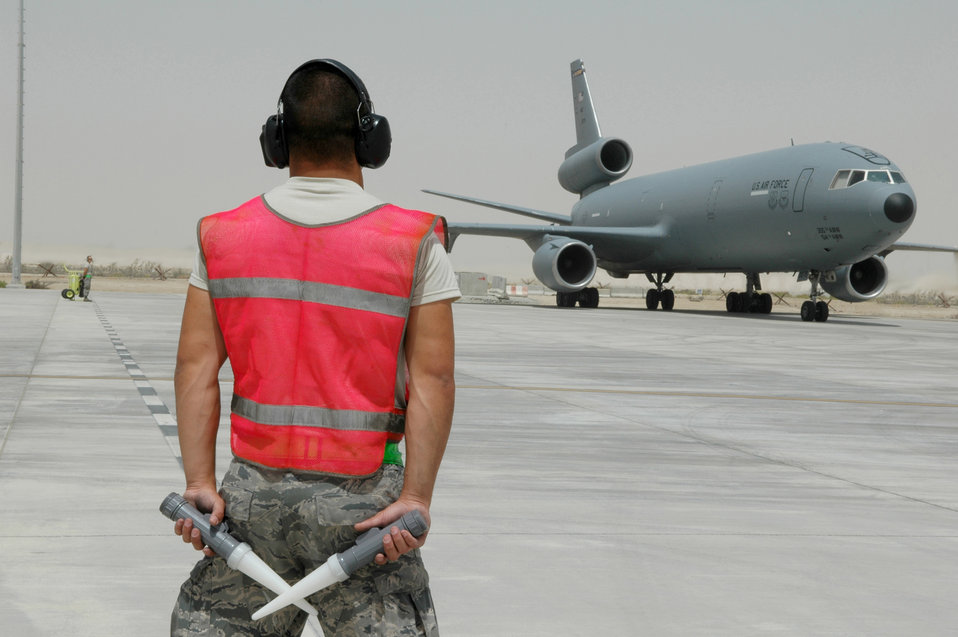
KC-10 in Southwest Asia

Airman 1st Class Gene Meredith prepares for the launch of a KC-10 Extender May 18, 2011, in Southwest Asia. Airman Meredith is a crew chief assigned to the 380th Expeditionary Aircraft Maintenance Squadron.